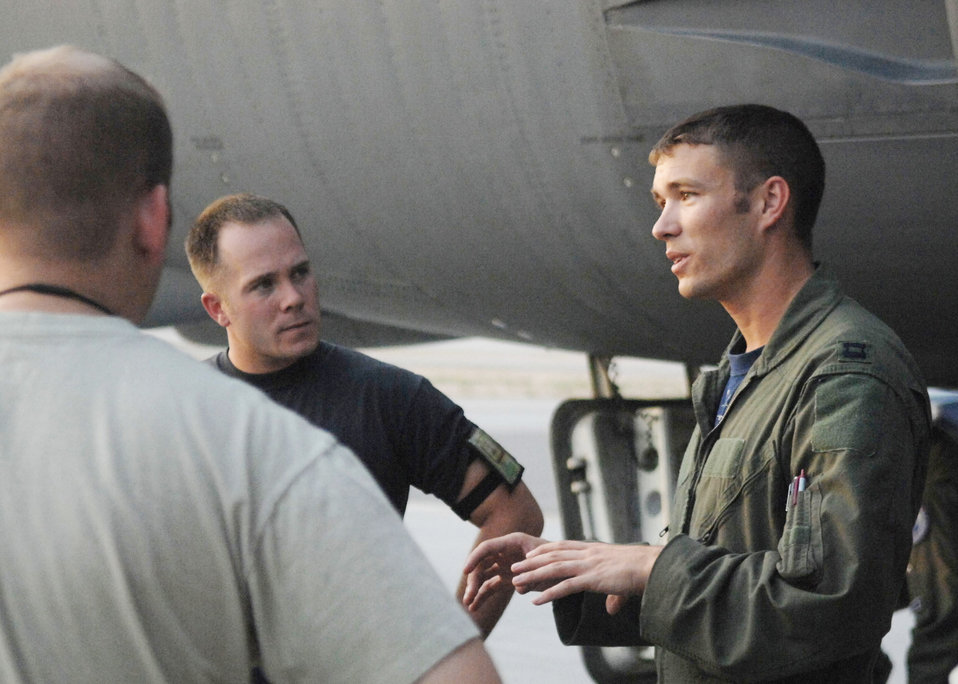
Veterans, first timers benefit from Red Flag exercises

Staff Sgt. Sean Adkins listens as Capt. Warren Carroll conducts a post-flight maintenance brief with maintainers Aug. 21, 2009 after arriving at Nellis Air Force Base, Nev. Captain Carroll is assigned to the 20th Bomb Squadron at Barksdale AFB, La. Sergeant Adkins is assigned to the 2nd Maintenance Squadron at Barksdale AFB.